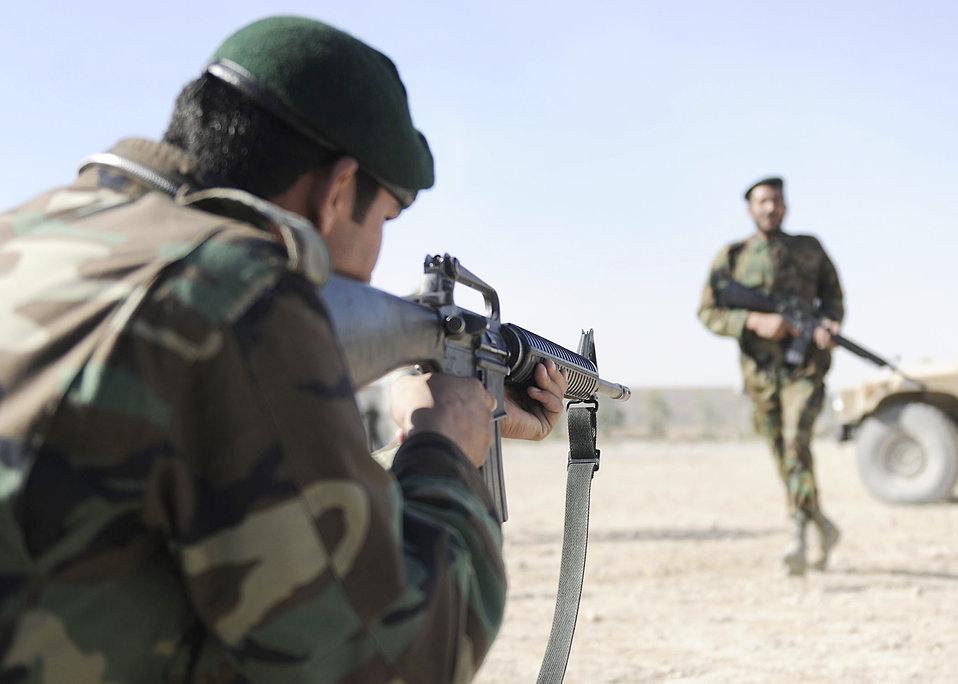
Afghan air force members from the Kandahar Air Wing Security Kandak practice dismounted Humvee operations at Kandahar Airfield, Afghanistan, Nov. 7, 2010. Air Force members from the 443rd Air Expeditionary Advisory Squadron have been mentoring Afghan soldiers on techniques and tactics of becoming part of a quick-response force.